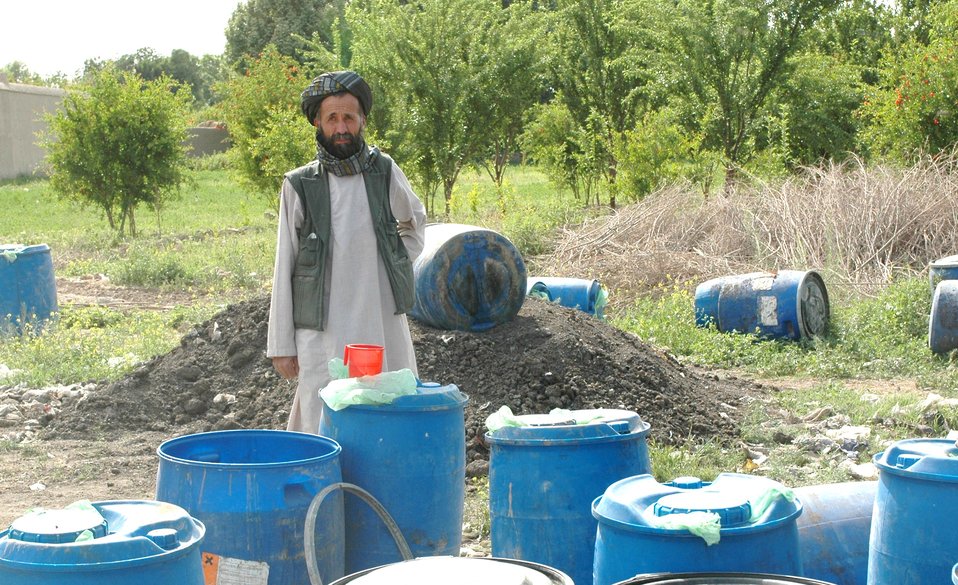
Dr Shah Visits Argandab April 10, 2010